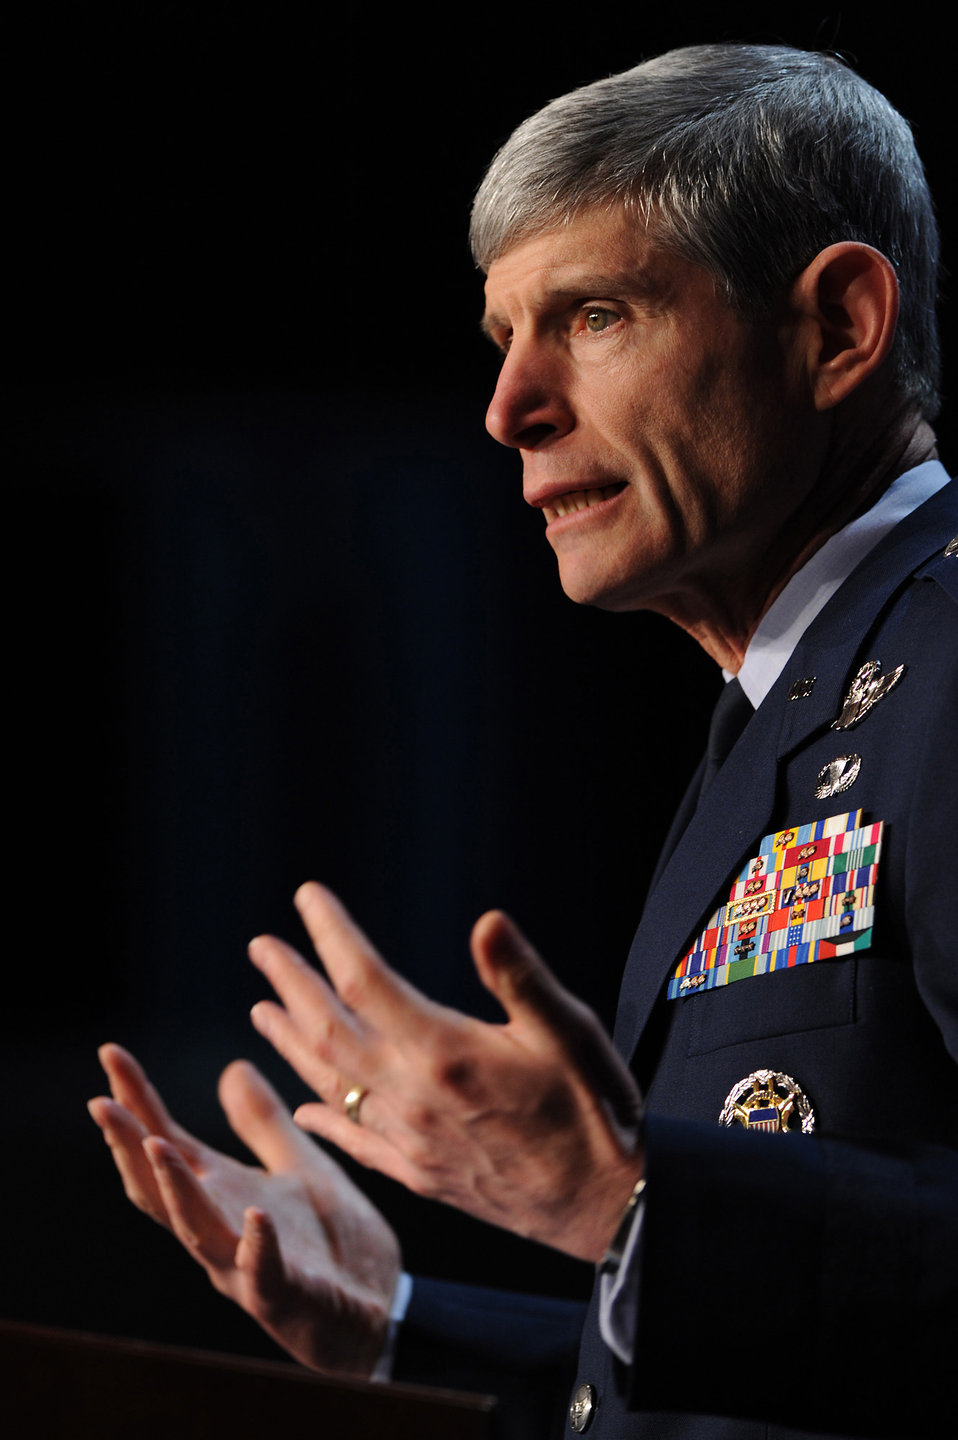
CSAF Speaks at Reserve Officers' Association Symposium

Air Force Chief of Staff Gen. Norton Schwartz speaks at the Reserve Officers Association National Security Symposium Jan. 30, 2011, in Washington, D.C. General Schwartz said men and women serving in the Reserve play a key role in today's joint fight efforts.